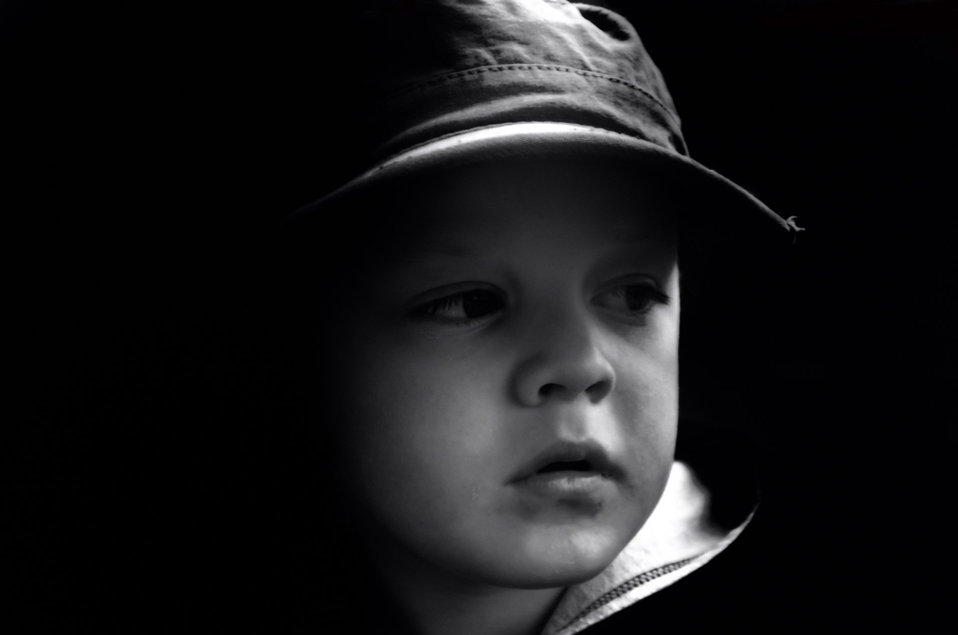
Look - background.